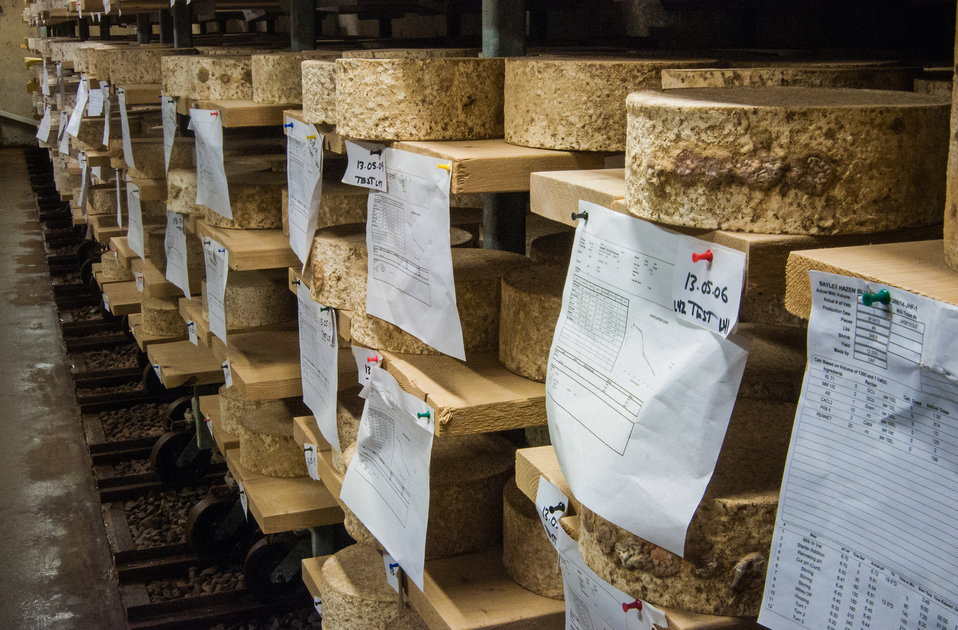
Bayley Hazen Blue is a natural-rind blue cheese produced by The Cellars at Jasper Hill in Greensboro, VT. The usual peppery spice character associated with blue cheese takes a backseat to sweet, nutty, and grassy flavors in the milk. The breakdown of fats and proteins during ripening often show a distinct licorice flavor in the creamy and crumbly paste. The name, however, comes from a Vermont landmark – the Bayley Hazen Military Road, commissioned by George Washington as a Revolutionary War supply route. The Cellars at Jasper Hill, an innovative 22,000 square foot underground facility consisting of seven ageing caves received a U. S. Department of Agriculture (USDA) Rural Development (RD) Business and Industry Guaranteed (BIG) Loan. This loan was used to construct state-of-the-art artesian cheese aging cave facility to support expanded on-farm value-added cheese production as well as contract aging for other local cheese makers so they may access the growing market for artisan cheese nationwide on Sep. 19, 2013.